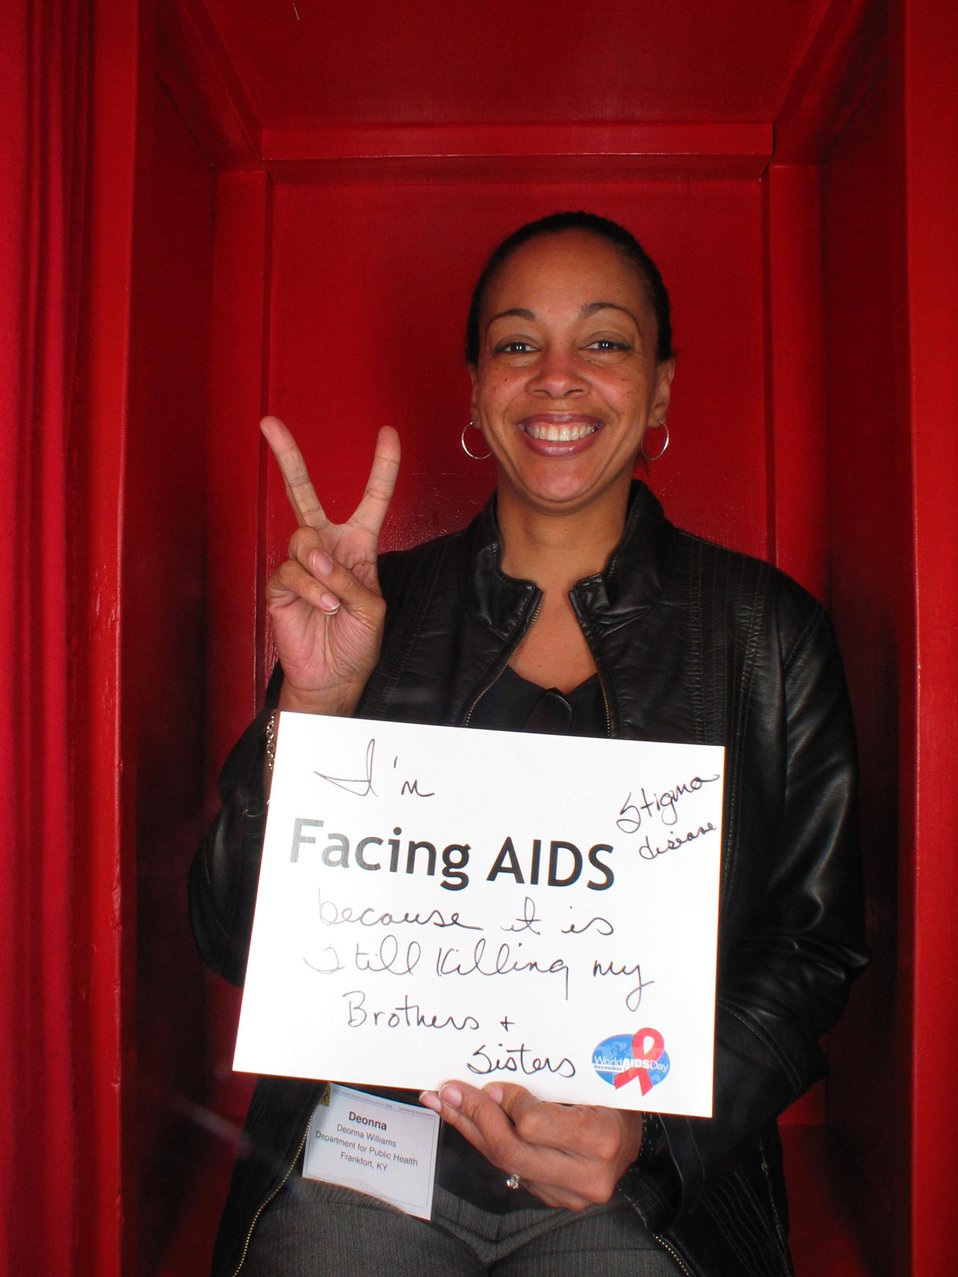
I'm Facing AIDS because it is still killing my brothers and sisters